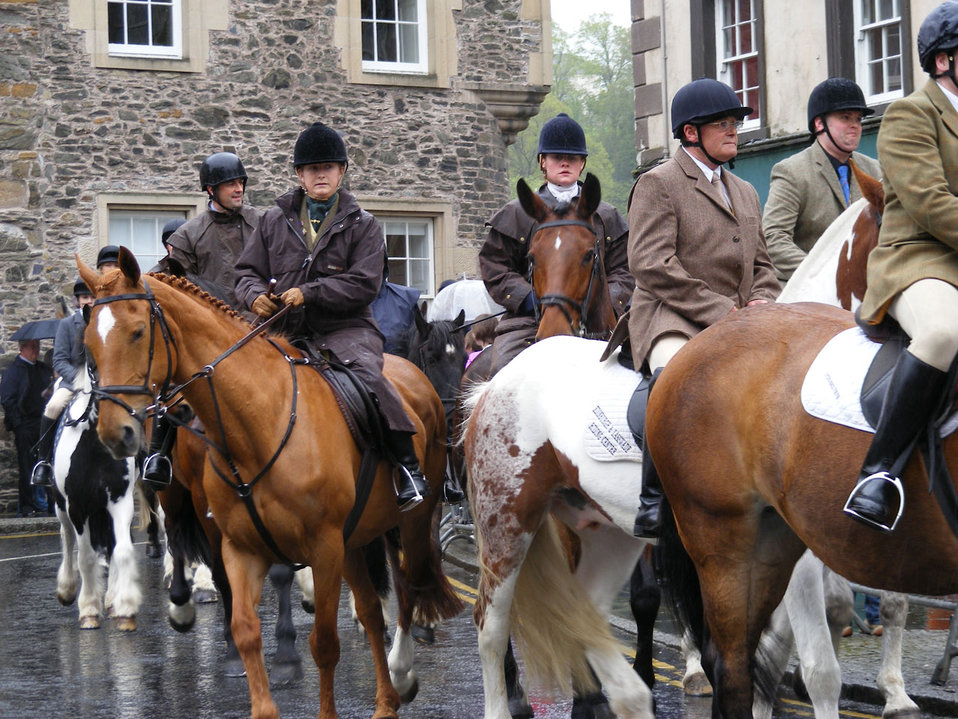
Bonchester rideout

At hawick, scottish borders, 9 may 2009.